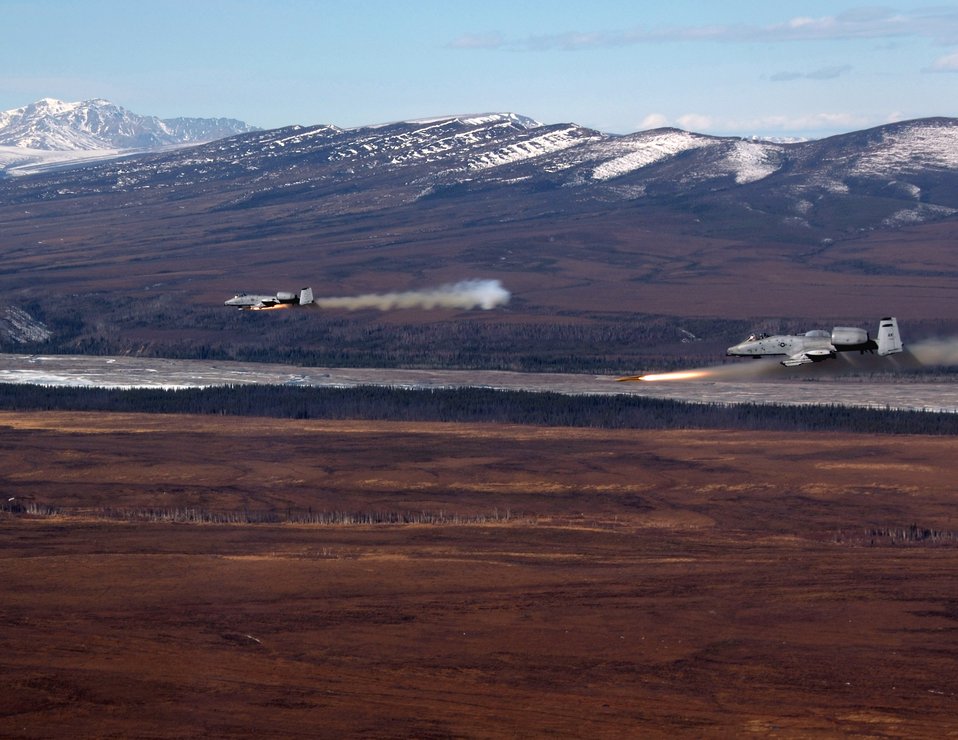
Thunder and lightning

Two A-10 Thunderbolt IIs fire AGM-65 Maverick missiles over the Pacific Alaska Range Complex April 24 during live-fire training. The A-10s are from the 355th Fighter Squadron from Eielson Air Force Base, Alaska. Members from the 355th FS are tasked to provide mission ready A-10s and a search and rescue capability, in Alaska and deployed sites worldwide.